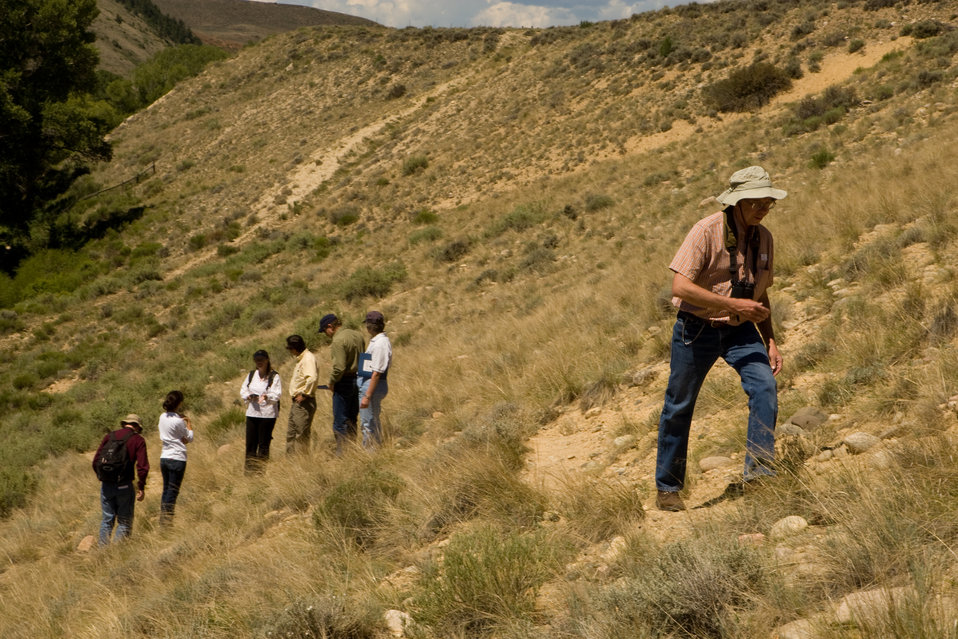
Colorado Rare Plant Conservation Initiative

The Colorado Rare Plant Conservation Initiative (RPCI) is a partnership of 23 statewide and regional agencies, private organizations, and academic institutions working to conserve 121 rare plants in Colorado. As part of these efforts the group developed the Colorado Rare Plant Conservation Strategy, developed Best Management Practices to reduce energy development impacts, addressed climate change, and developed focused strategies for the conservation of individual species at eight priority landscapes. The group has also worked to coordinate volunteer efforts for plant conservation across the state.